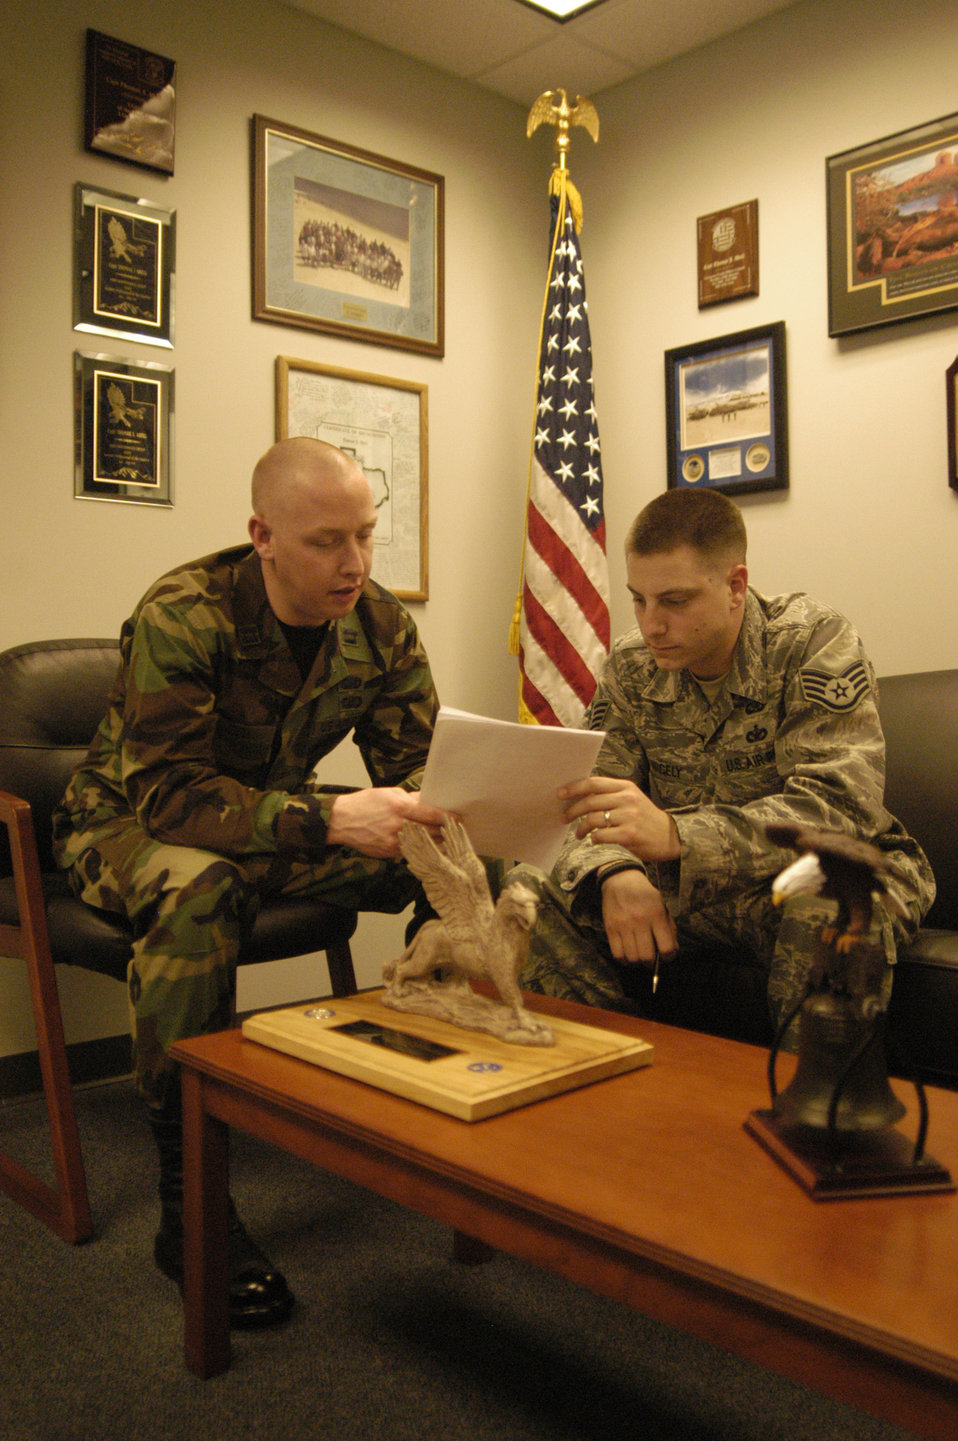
Dover Airman to receive CFC Hero Award

Capt. Thomas Abell discusses processes with Staff Sgt. Brandon Nicely to improve customer service at Dover Air Force Base, Del. Captain Abell is the 436th Mission Support Squadron Military Personnel Flight commander and Sergeant Nicely is the 436th MSS assistant NCO in charge of force management. Captain Abell was recently awarded the 2007 CFC Hero Award.